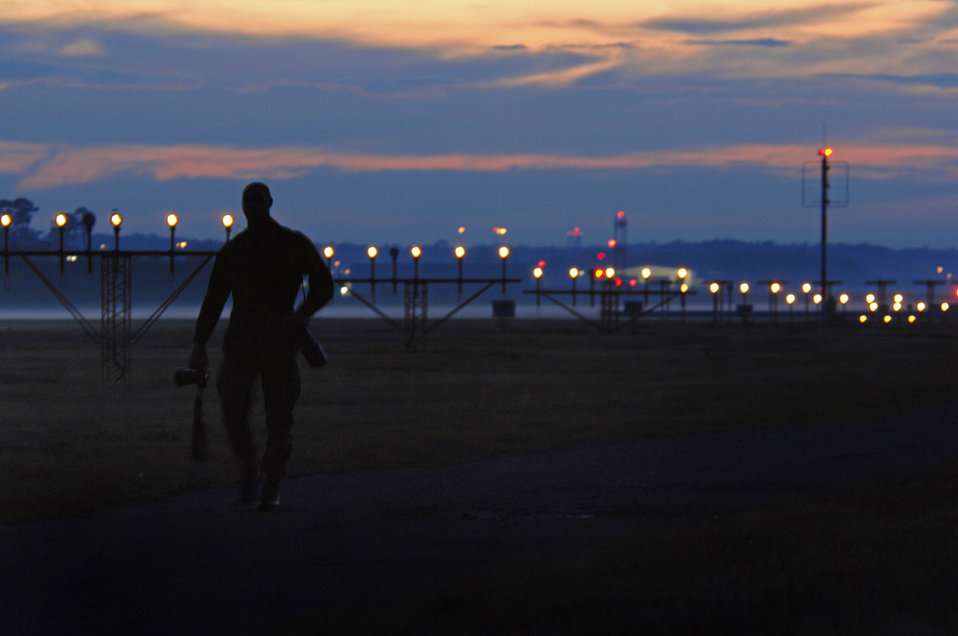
The sky is the limit

Airman 1st Class Kenny Holston walks off the flightline with his cameras after an evening of documenting aircraft operations Nov. 3 at Ramstein Air Base, Germany. Airman Holston is a 435th Air Base Wing photojournalist.